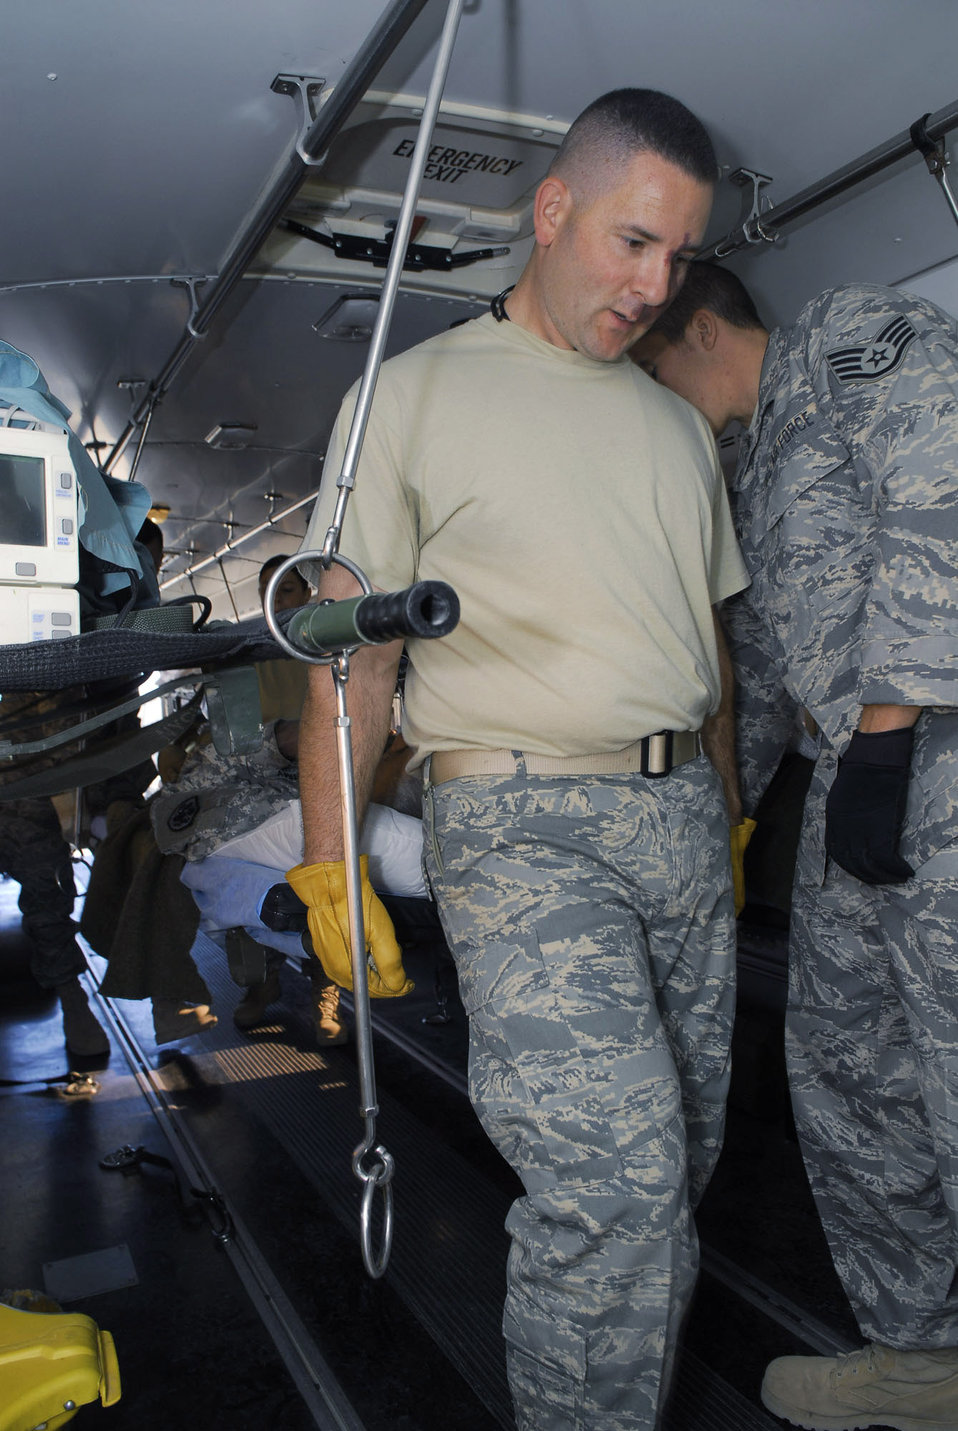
Out of harm's way

Tech. Sgt. Adam Page loads a patient on an ambulance bus Nov. 13 at Balad Air Base, Iraq. Patients heading to Germany for additional medical care process through the Contingency Aeromedical Staging Facility before boarding a C-17 Globemaster III for the flight. Sergeant Page, assigned to the 332nd Expeditionary Aerospace Medical Squadron, is deployed from Travis Air Force Base, Calif.